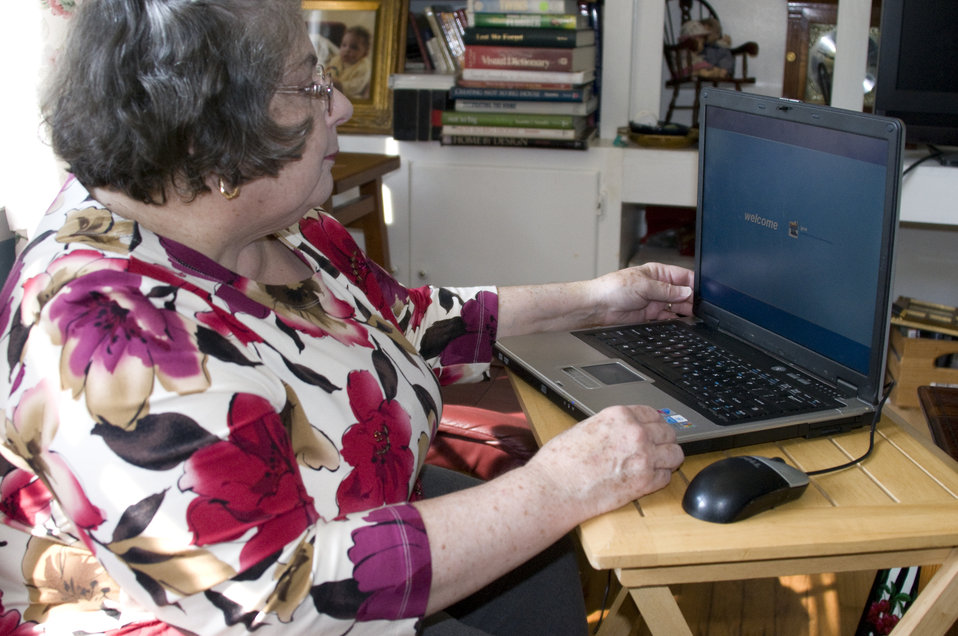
Seated at a small folding table, atop which was a laptop computer, this female rheumatoid arthritis patient was shown logging on to her workstation. With the aid of a sock-donning device, she had just dressed her feet in stockings and zipper-laced sneakers. Living with arthritis does not necessarily mean existing in a non-functional state.